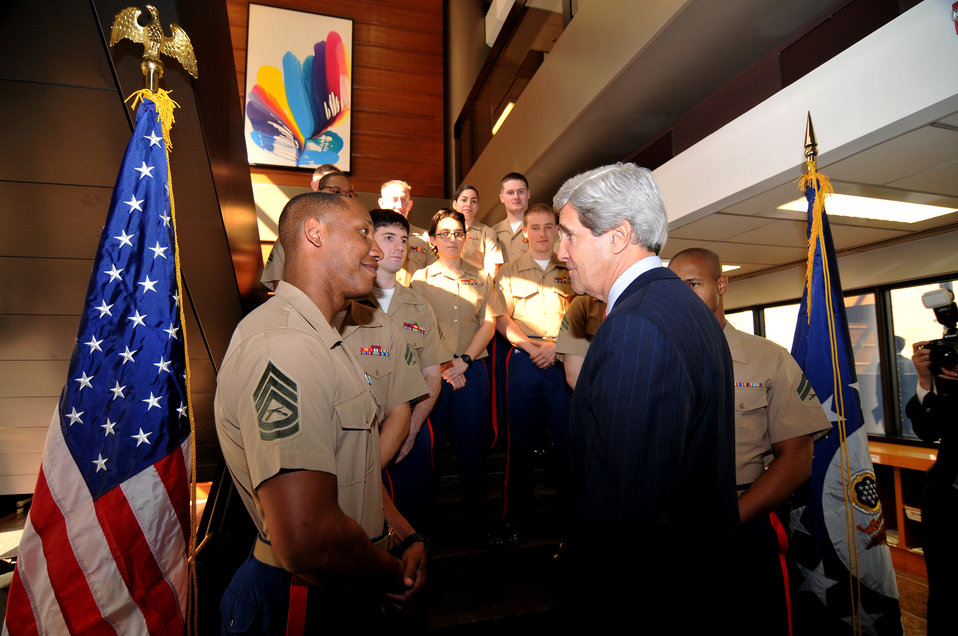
Secretary Kerry Meets With U.S. Embassy Guards

U.S. Secretary of John Kerry meets with U.S. Embassy Guards at the U.S. Embassy and five consulates in Japan in Tokyo, Japan, on April 15, 2013.